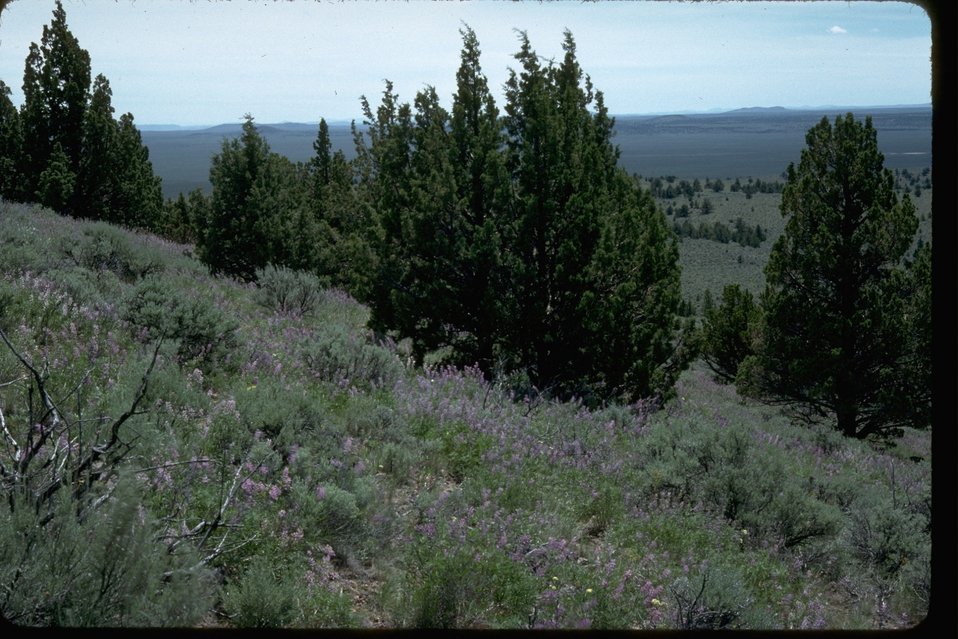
Lupine on a hillside at Glass Buttes.